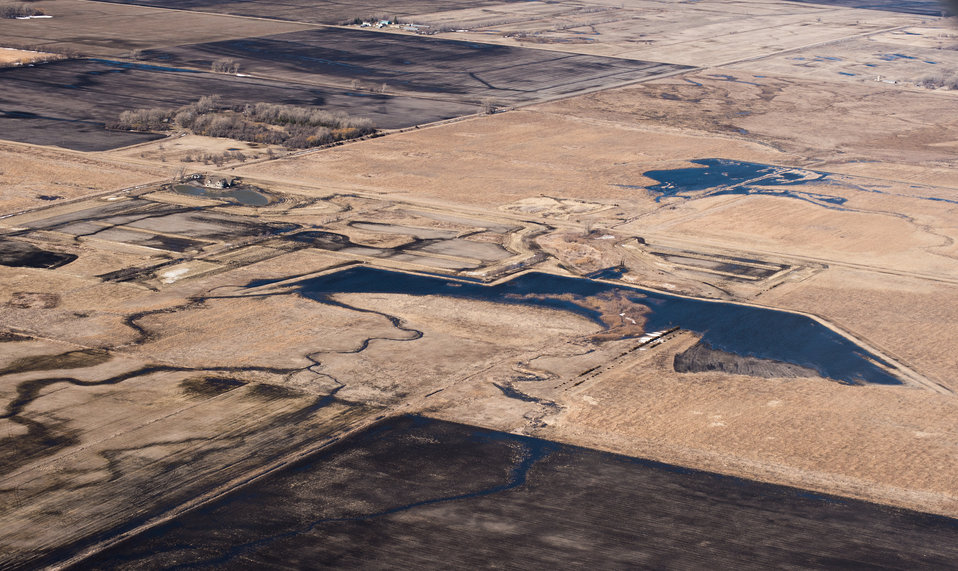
Ehlert North U.S. Department of Agriculture (USDA) Natural Resources Conservation Service (NRCS) Wetland Reserve Program (WRP) in Wilkin County, MN, on Tuesday, April 30, 2013. For information about this and other programs from the USDA Red River Basin Initiative (RRBI) please see www.mn.nrcs.usda.gov/news/features13/RRBI.html.